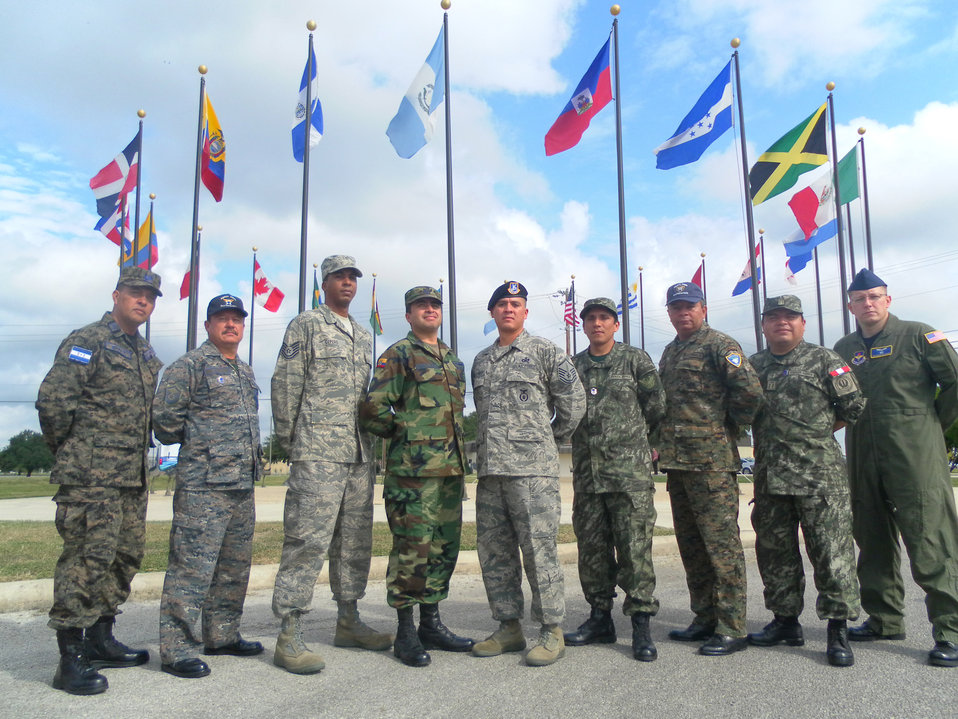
Inter-American NCO Academy opens to NCOs

Inter-American NCO Academy class 10-C stands for a group photo outside the school Dec. 1, 2010, at Lackland Air Force Base, Texas. From left to right are S/O Mayor (E-8) Denis Paz of Honduras; SGTO. Mayor (E-8) Walter Avila of Guatemala; Tech Sgt. Leonardo Cepero of the U.S. Air Force; Suboficial (E-7) Edgar Yandun of Ecuador, a guest Instructor; Master Sgt. Benjamin Miranda of the U.S. Air Force, an instructor; TC3. FAP. (E-7) Miguel Ochoa of Peru; SGTO. TEC. (E-7) Byron Flores of Guatemala; TC1. FAP. (E-8) Walter Vivas of Peru; and Tech Sgt. George Nikolakakos of the U.S. Air Force.